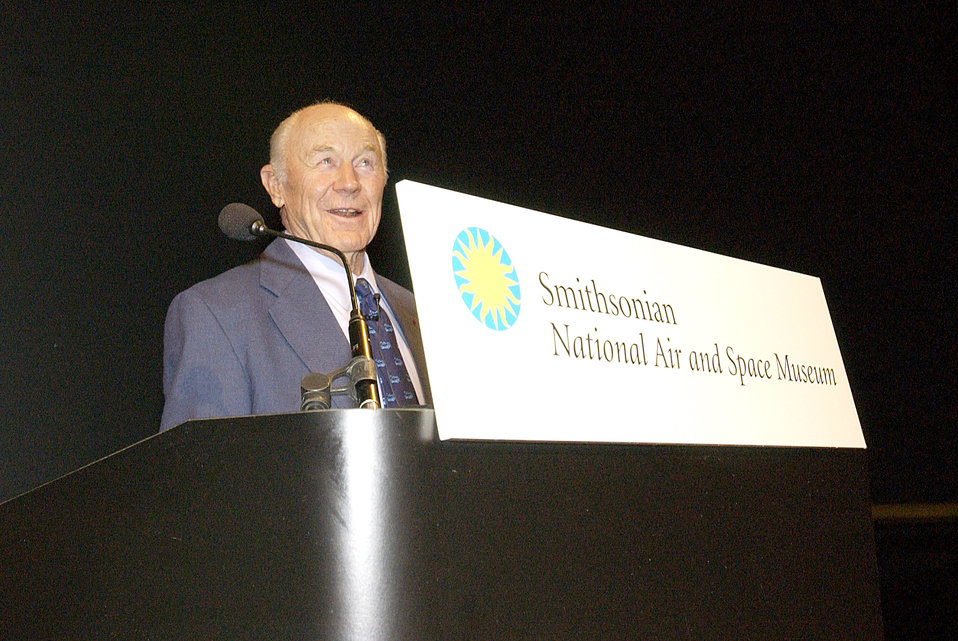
General Yeager speaks at Smithsonian

WASHINGTON -- Retired Brig. Gen. Charles E.